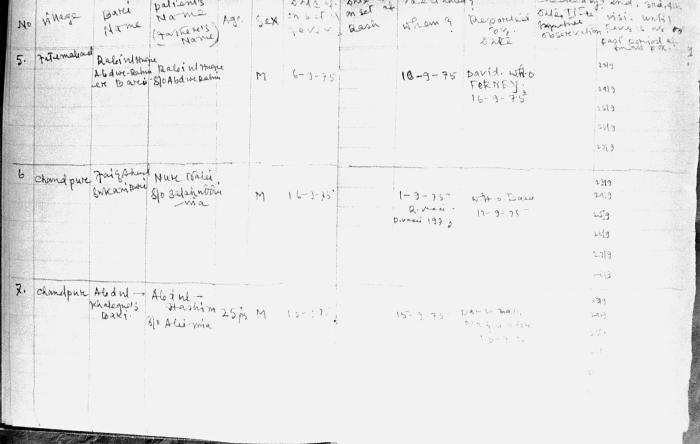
Though the legibility of this chart is questionable, it appears that this is a page view of a cross-notification register. This was yet another method of record keeping used by the field searchers during their data recording activities while on their house to house searches for smallpox cases. The cross notification register was used in a synchronous manner with data entered into the 'Containment Book', which recorded the names and locations of any new smallpox cases, or people who'd been in contact these new cases.